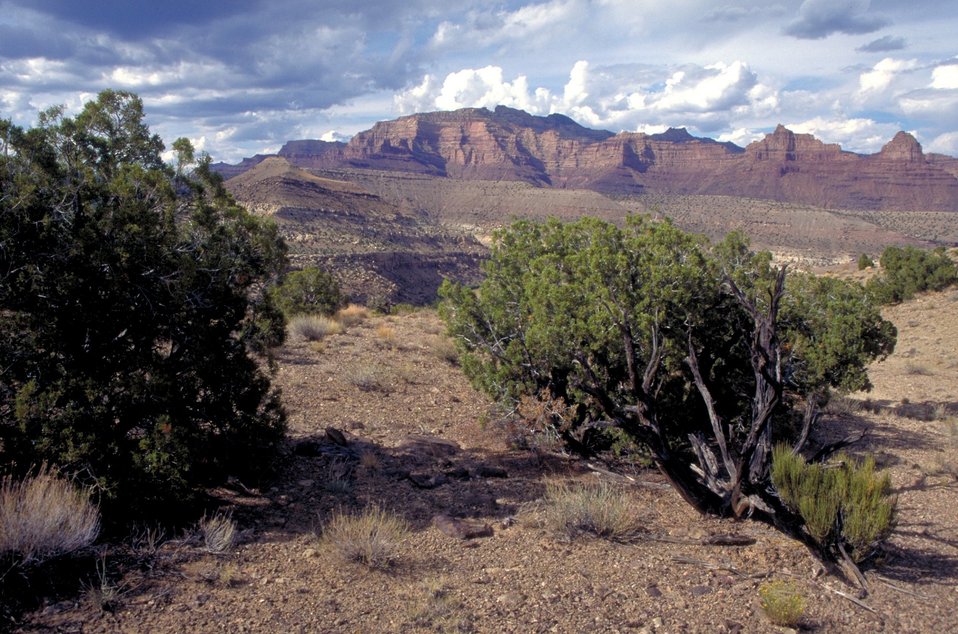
Desolation/Gray Canyons near Price, Utah.